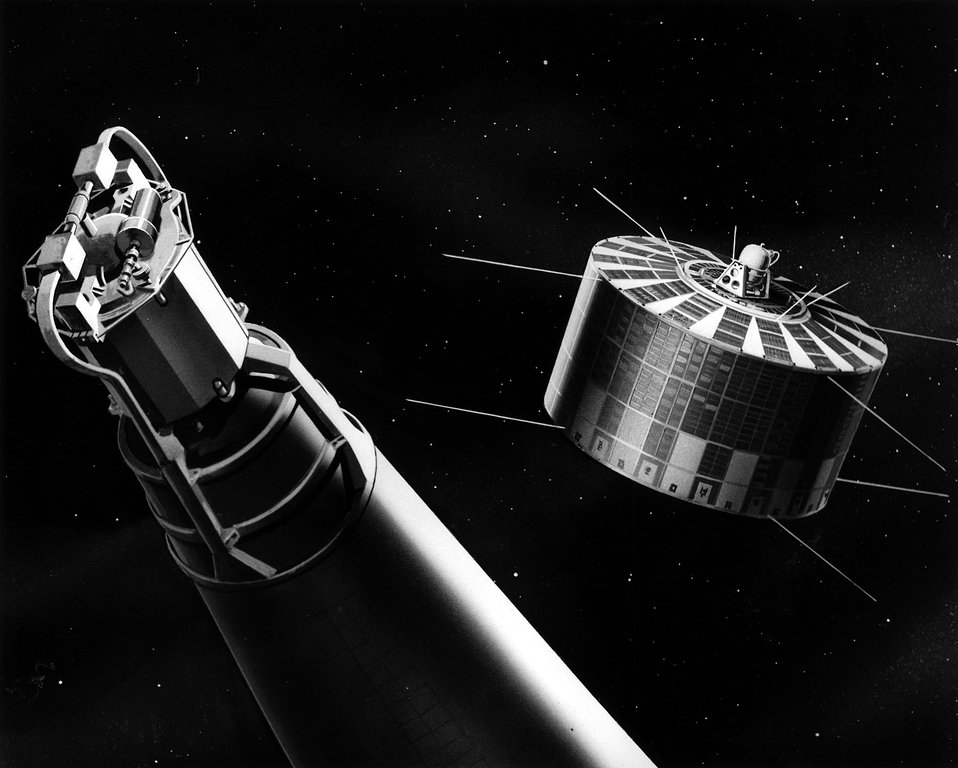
Artist's conception of two compact SNAP systems; the SNAP 10A and the Transit navigation satellite.